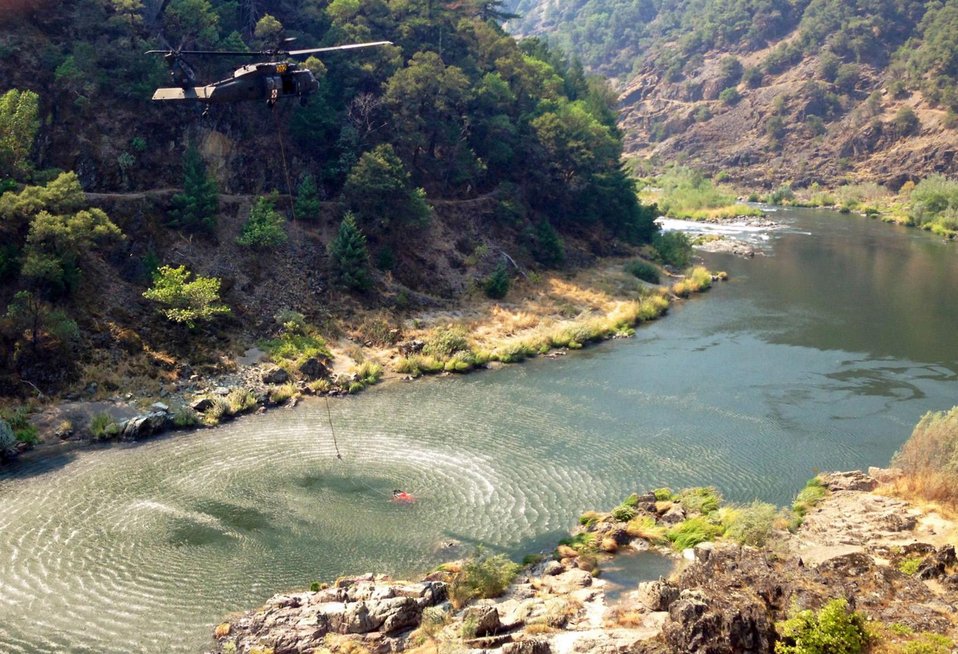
Helicopter refills its water bucket at the Rogue River at the Big Windy Complex Fire. The Big Windy Complex Fire consists of three fires: The Big Windy Fire, Calvert Peak Fire, and Jenny Fire (formerly the Windy 16 Fire) near Grants Pass, OR. The fires began on Jul. 26, 2013 by lighting have consumed approximately 15,358 acres and are 15% contained.